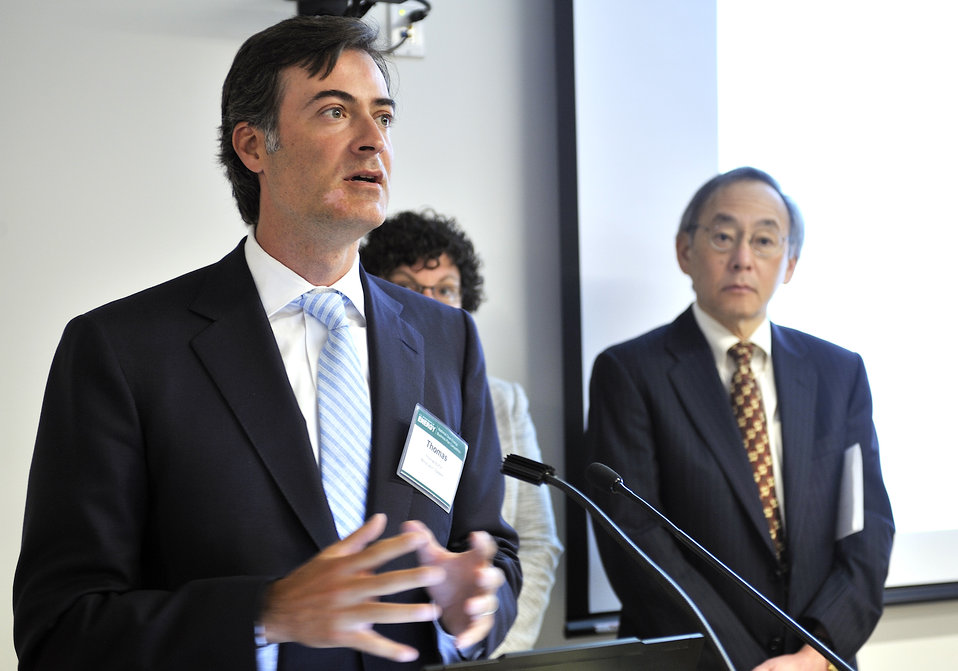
National Clean Energy Business Plan Competition

The National Clean Energy Business Plan Competition inspired nearly 300 university teams across the country to create new businesses to commercialize promising energy technologies developed at U.S. universities and the National Laboratories.